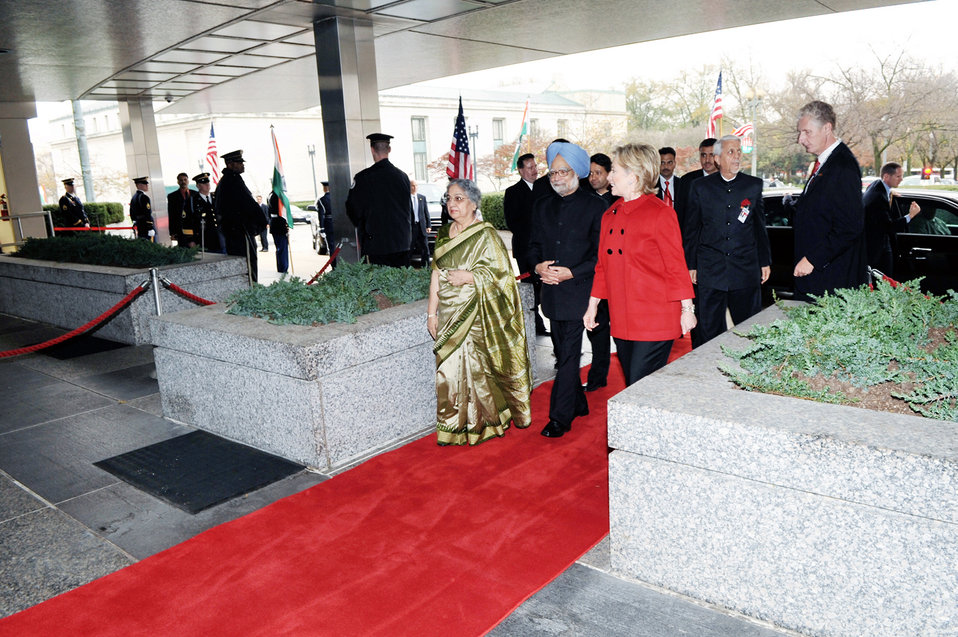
Vice-President Biden, Secretary Clinton Co-Host Social Lunch in Honor of Indian Prime Minister

U.S. Vice-President Joe Biden Dr. Jill Biden co-host a social lunch with U.S. Secretary of State Hillary Rodham Clinton in honor of Indian Prime Minister H.E. Dr. Manmohan Singh and Dr. Gurusharan Kaur at the U.S. Department of State in Washington, DC November 24, 2009.